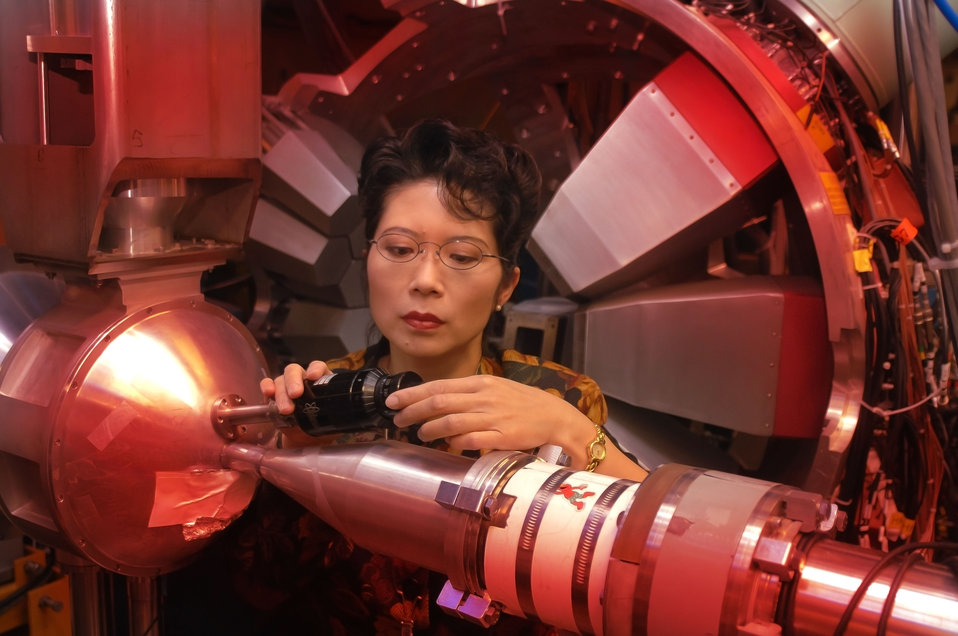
Physicists Chang-Hong Yu ORNL 2006

06-362 DOE photo Lynn Freeny 11-19-2006 Oak Ridge National Laboratory Oak Ridge Tennessee